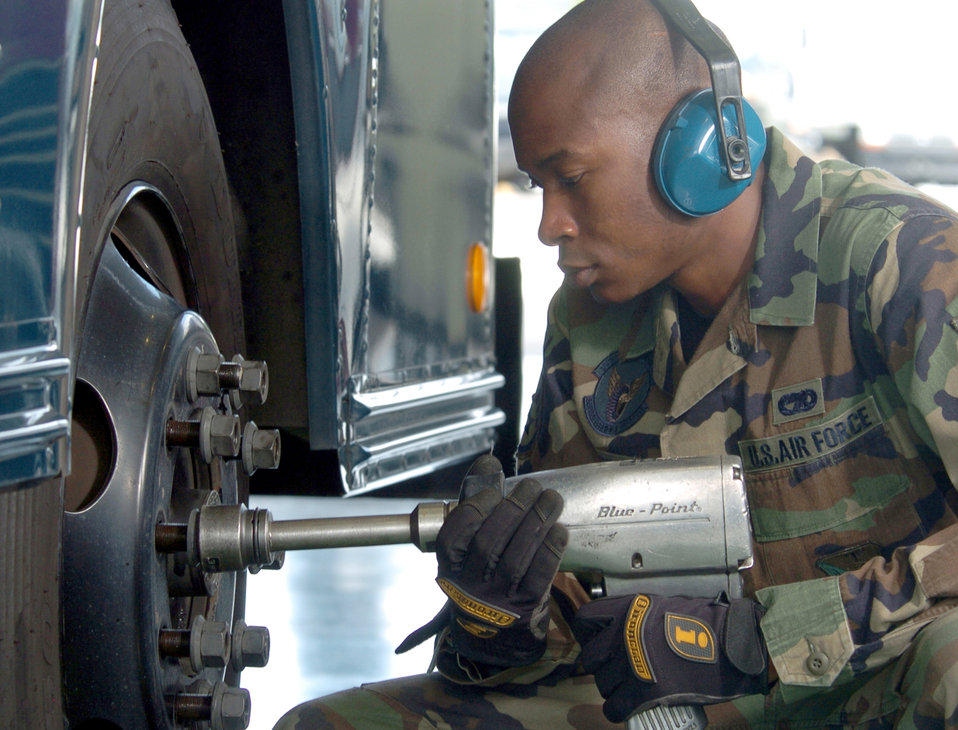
Wheelin’ and dealin’

YOKOTA AIR BASE, Japan (AFPN) -- Staff Sgt. Tygi Jones uses an impact wrench to tighten the lug nuts on a bus wheel here. Sergeant Jones is a mechanic with the 374th Logistics Readiness Squadron's vehicle maintenance element. The element replaces and rebuilds parts and components for more than 1,100 vehicles here. Some of these parts include vehicle engines, transmissions, suspensions and steering and brake systems.